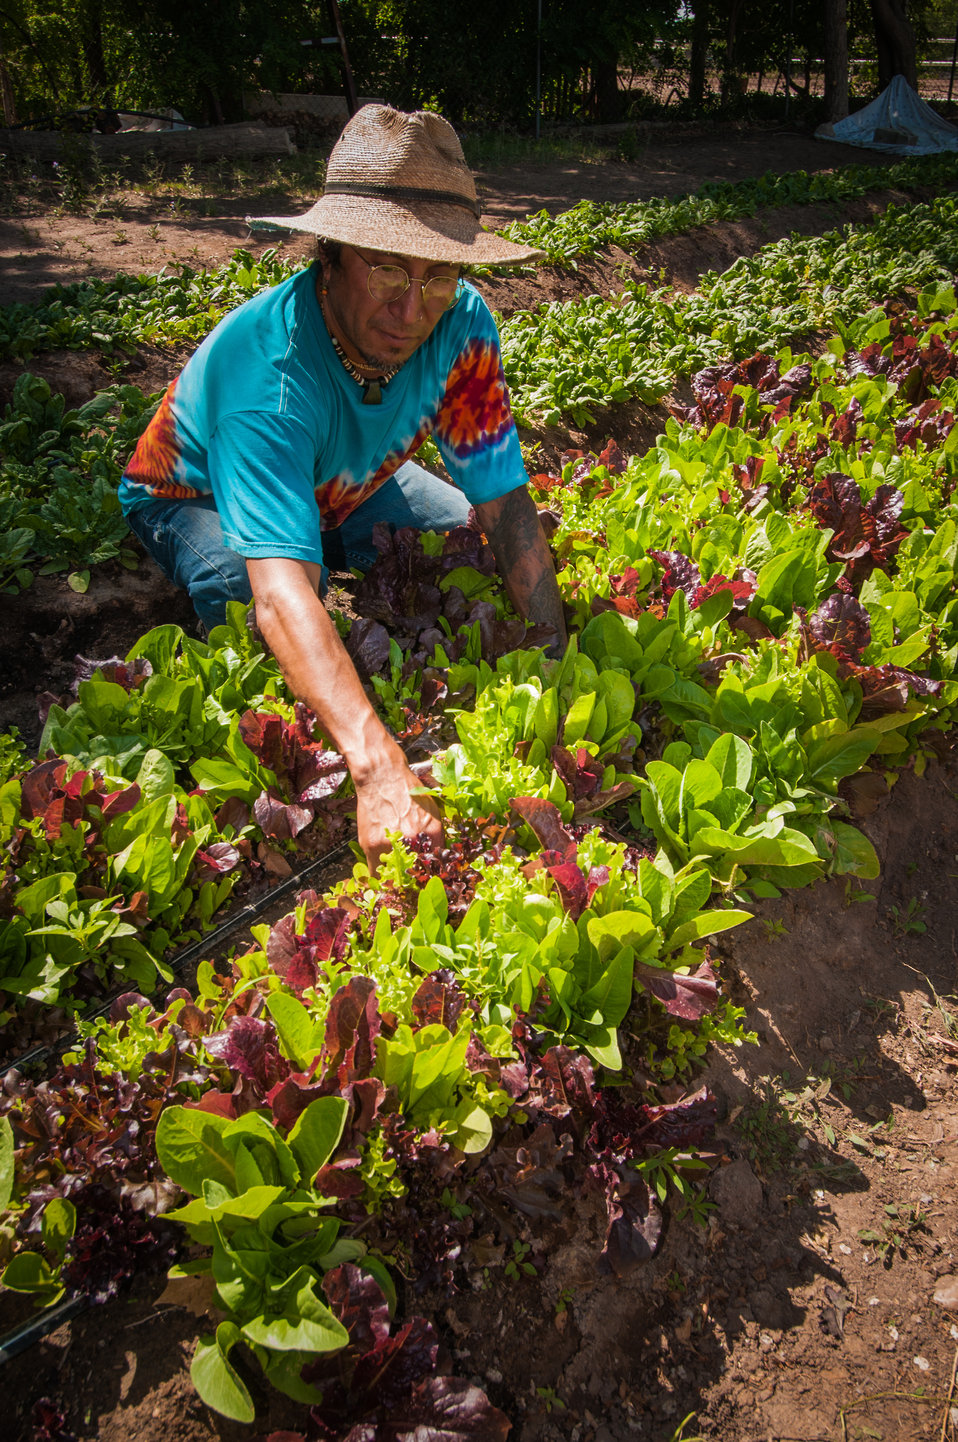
Fidel Gonzales tends to lettuce grown by Los Jardines Institute Farm, Albuquerque, NM on Monday, Jun. 10, 2013. Los Jardines Institute Farm, a local sustainable farm, was able to construct a high tunnel house with a loan from the La Montanita Co-op. La Montanita Co-op offers loans to local farmers and food producers for development. La Montanita Co-op is a 17,000 member socially responsible, locally owned food cooperative that supports a stable market for local farmers and producers of sustainable and organic regional/local agriculture in Albuquerque, New Mexico. The co-op has a distribution center and two stores in Albuquerque; Valley and Nob Hill and stores in Santa Fe and Gallup, NM.